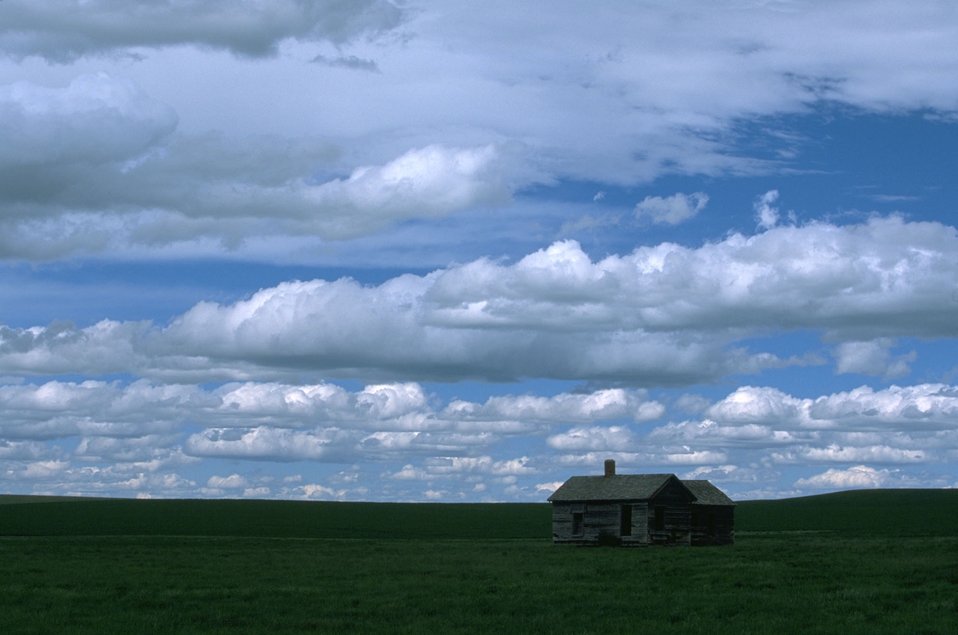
Cloud formations over the remains of a homestead